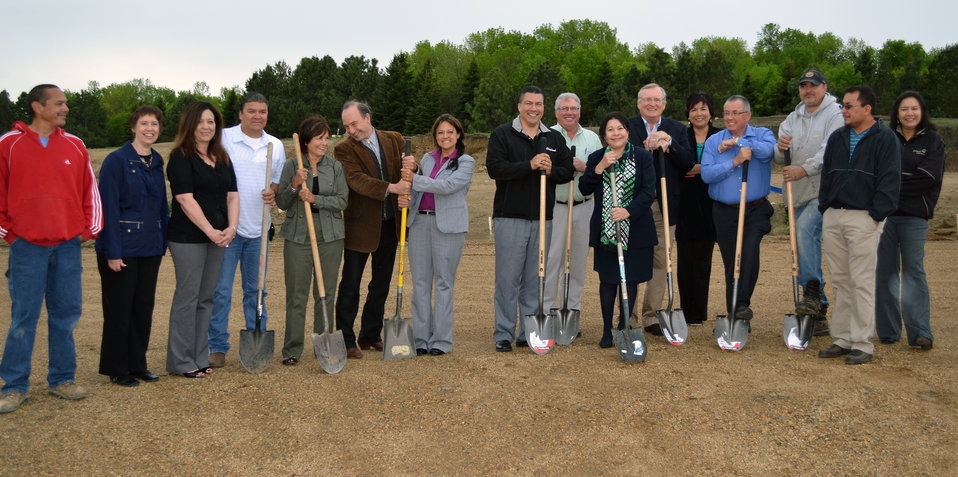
U.S. Department of Agriculture (USDA), Rural Housing Service (RUS) Administrator Tammye Treviño visit to South Dakota to co-chair a StrikeForce meeting in Sisseton, SD, attend a Housing Fair, and visit homes and facilities financed by USDA, Rural Development (RD) as part of National Homeownership Month, on Monday, June 3, 2013.